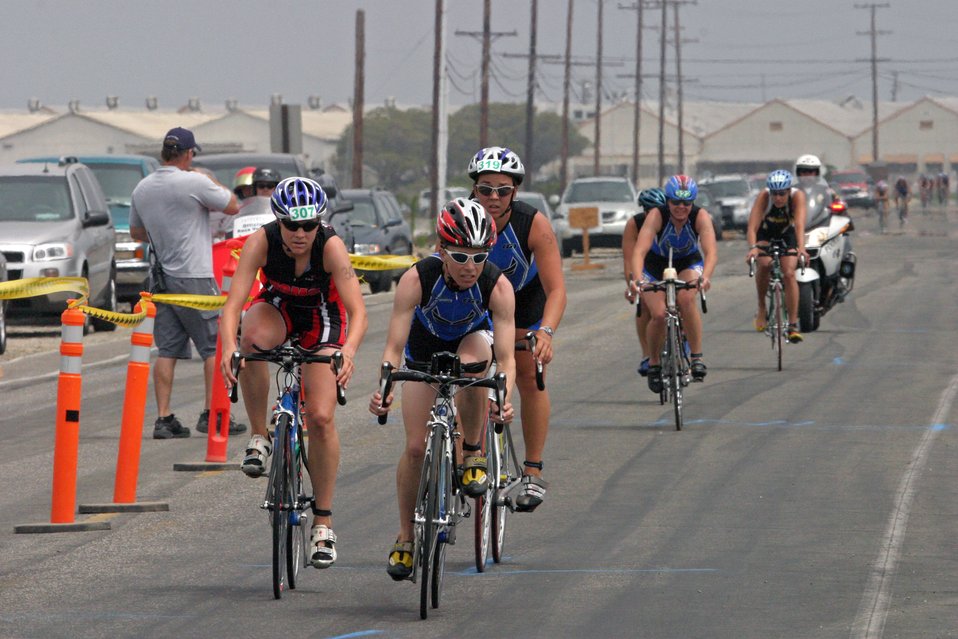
2007 Armed Forces Triathlon Championship

Senior Airman Jolene Wilkinson leads the pack during the 2007 Armed Forces Triathlon Championship at Naval Base Ventura County-Point Mugu, Calif., July 28. Airman Wilkinson, from Hill Air Force Base, Utah, was the top Air Force women's finisher and came in second overall in the women's division.